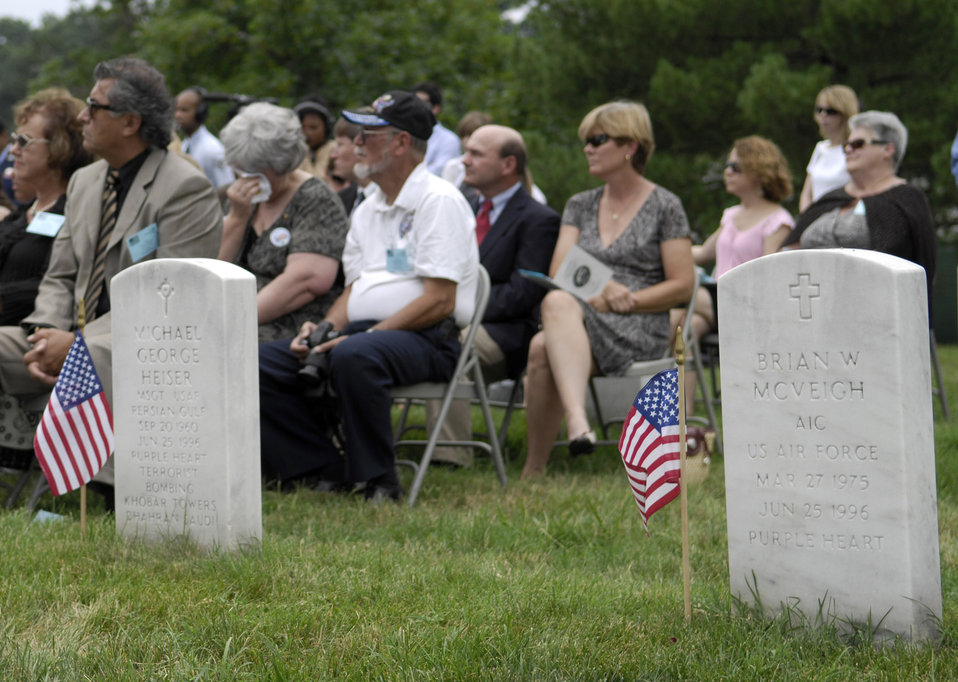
Remembrance

Guests listen during a remembrance ceremony, June 25, 2011, at Arlington National Cemetery, Va., to mark the 15th anniversary since the Khobar Towers bombing. In the foreground lie the headstones of Master Sgt. Michael George Heiser and Airman 1st Class Brian McVeigh, two of the nineteen Airmen killed in the terrorist bombing, June 25, 1996, at Dhahran Air Base, Saudi Arabia.